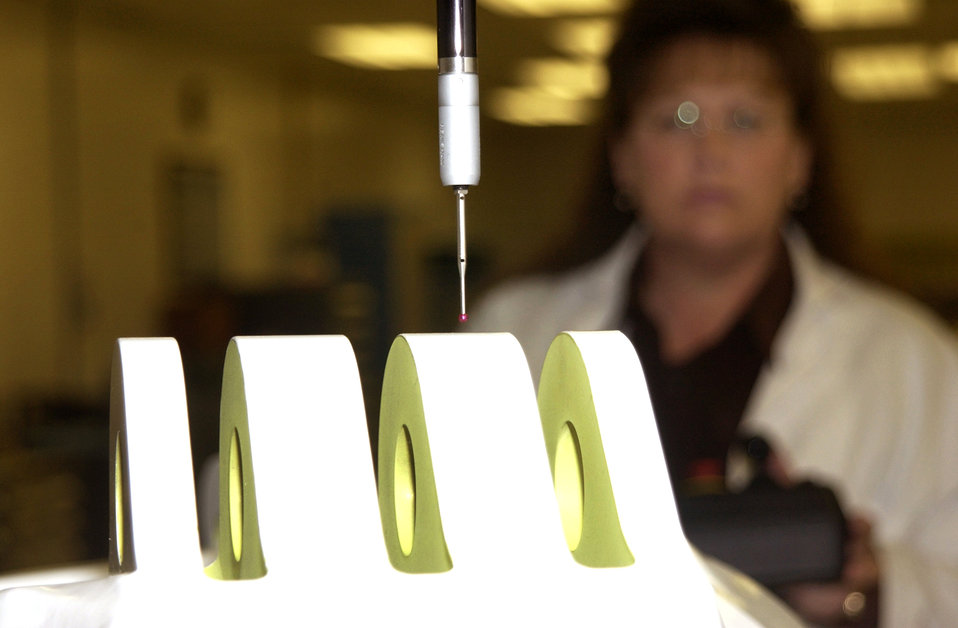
Hill employees get down to details

HILL AIR FORCE BASE, Utah -- Using the red-tipped trigger touch of the coordinate measurement machine, Connie Adams takes a three-dimensional measurement. She is an engineering technician in the quality verification center here.